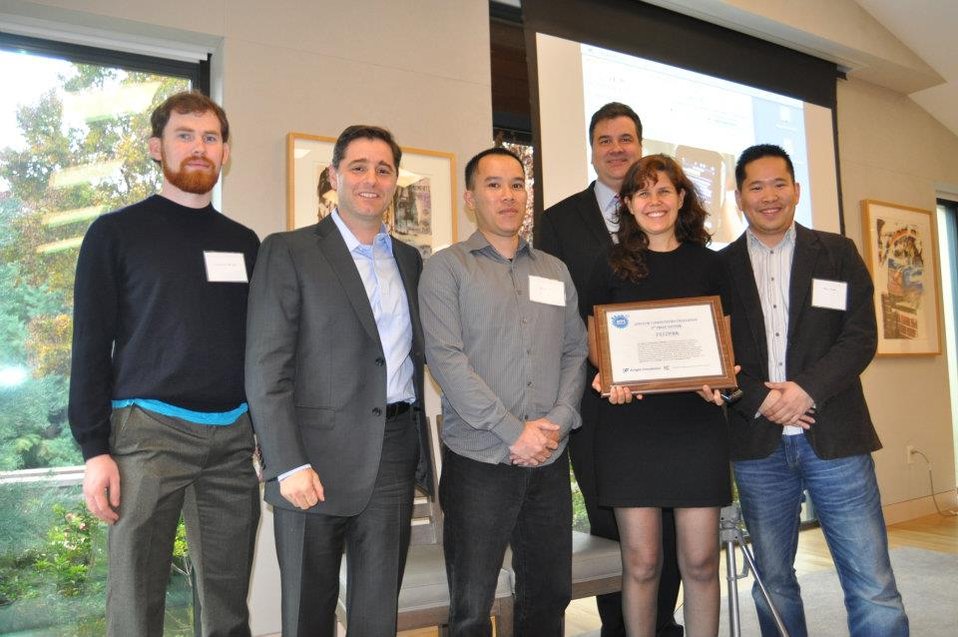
Txt2wk

Chairman Julius Genachowski and Knight Foundation National Program Director Damian Thorman congratulateApps for Communities third place winner, Txt2wk